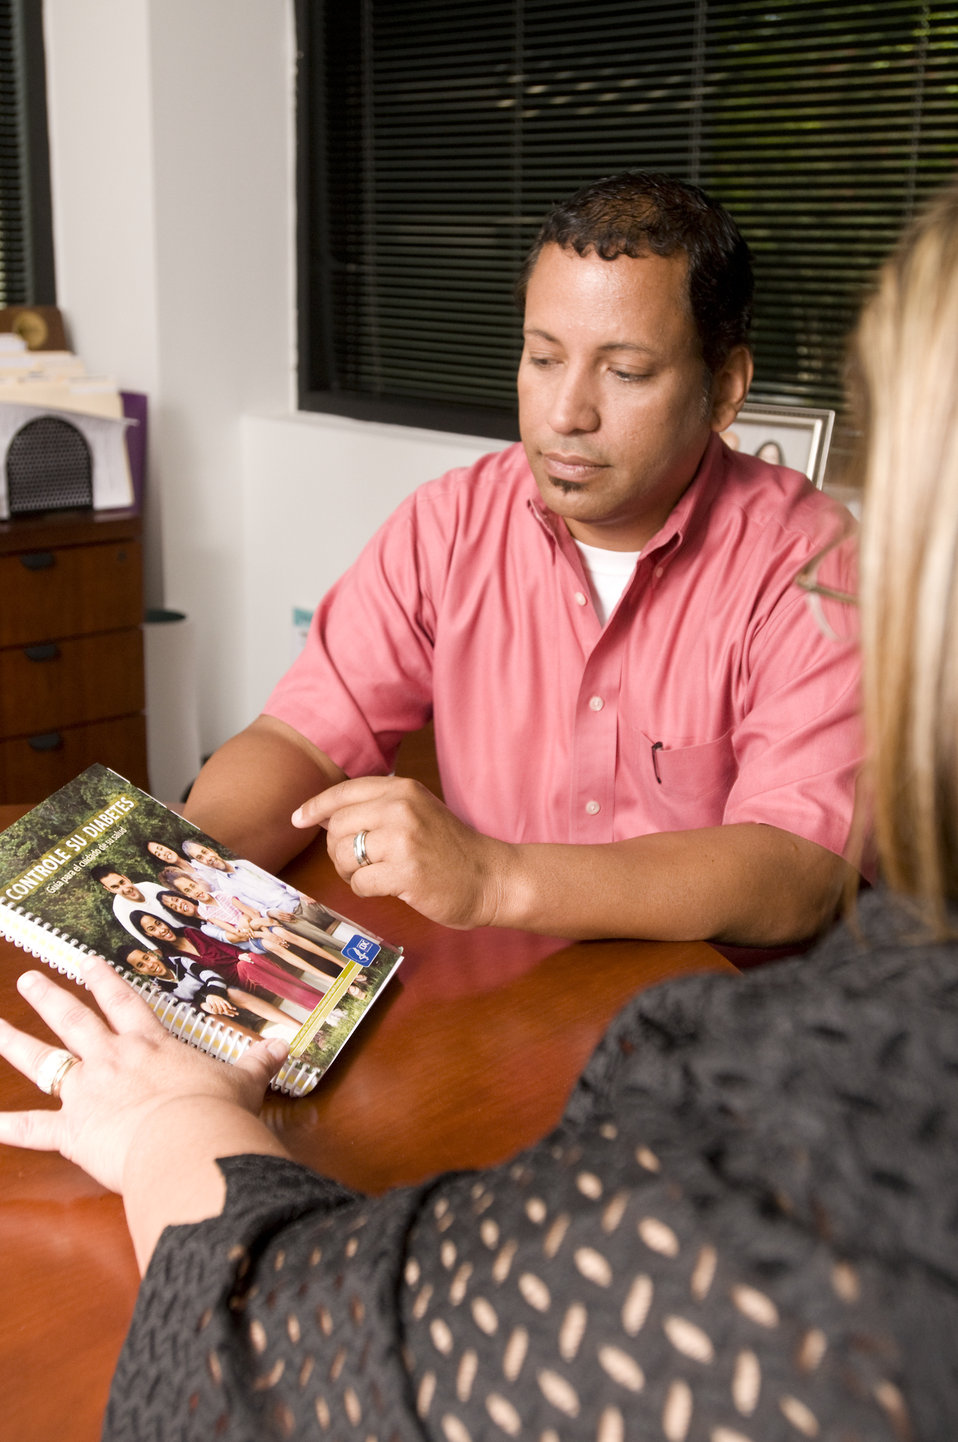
This image depicts a man with diabetes in the background listening to a community health worker familiar with the necessary proactive approach one must implement in order to maintain control over the detrimental effects of this disease. The health worker was providing answers to questions posed by the patient regarding actions he'd need to take, enabling him to lead a healthy, active life with diabetes. She was referencing a spiral-bound manual created by the Centers for Disease Control and Prevention entitled, 'Controle Su Diabetes', which translated into English means, 'Control Your Diabetes'.